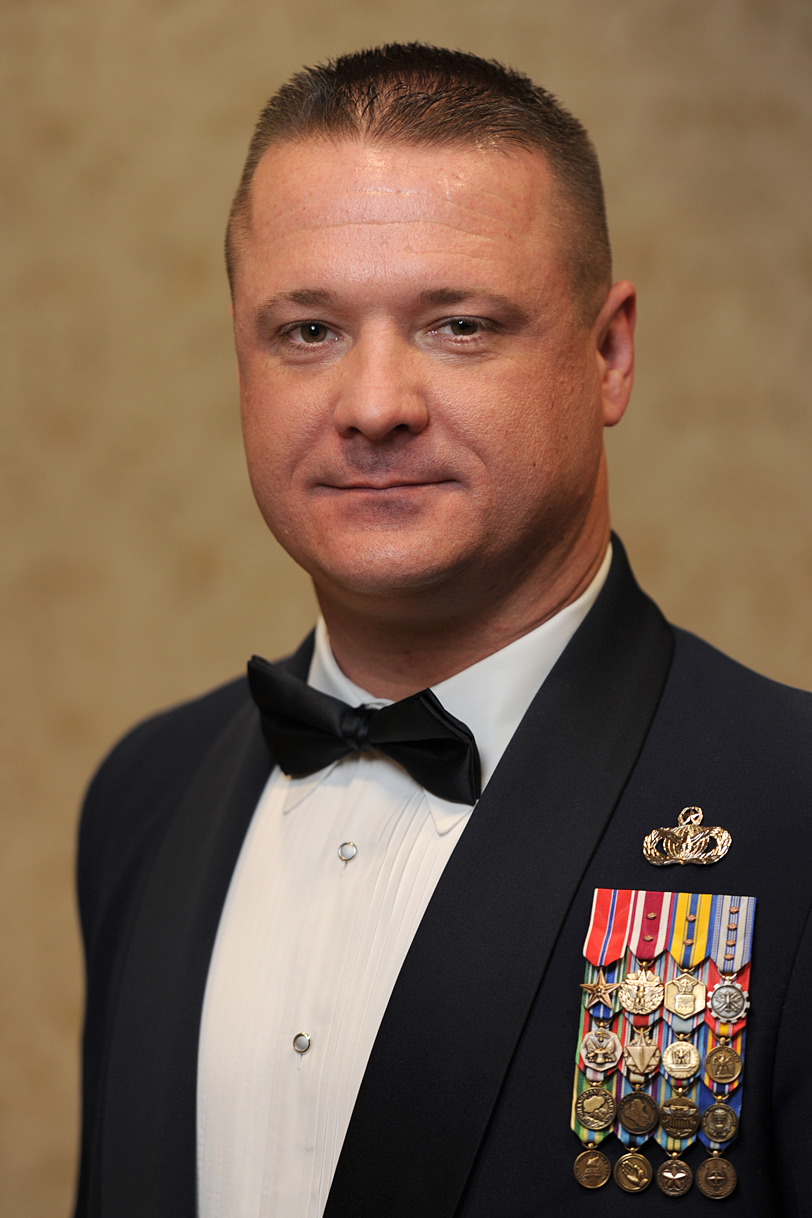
White House honors Iraq veterans

Senior Master Sgt. Donnie Bolton represented Illinois duing a special White House dinner honoring men and women who served in Iraq. Bolton had multiple deployments between 2007 and 2009.